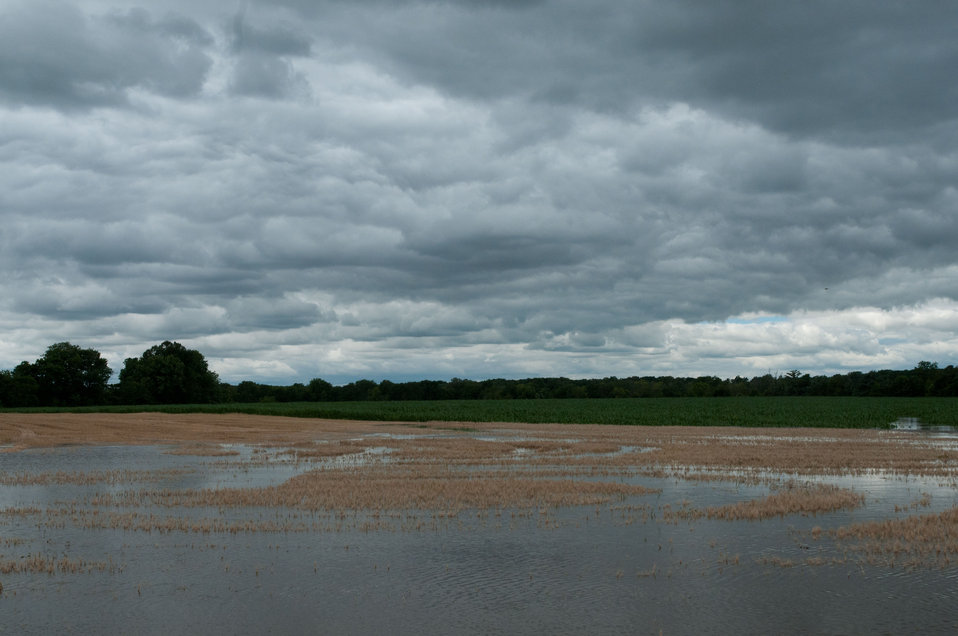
To save crops that threatened by Mississippi River floodwaters farmers harvested wheat two weeks early from the Yazoo River area of MS near Yazoo City, MS, on Monday, May 16. 2011.